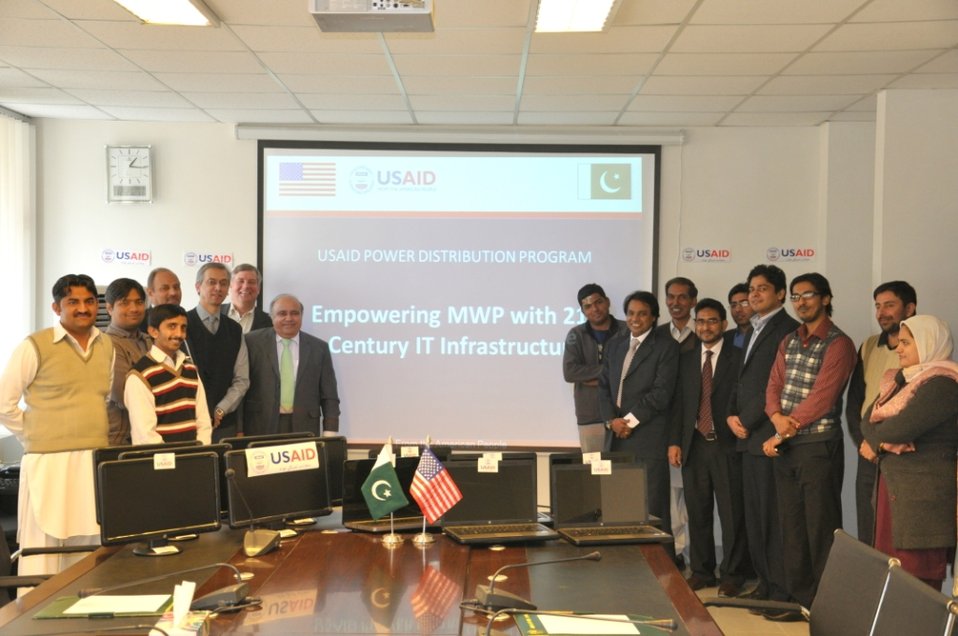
26 Dec - Empowering MWP with IT Infrastucture

MWP(Ministry of Water and Power)-Governance and restructuring team led by Robert Kolling from USAID Power Distribution Program along with senior MWP officials presided over the MWP IT-Upgrade rollout ceremony. The IT upgrade will help the ministry bring its hardware infrastructure up to date with modern international standards and improve its work efficiency and capability.